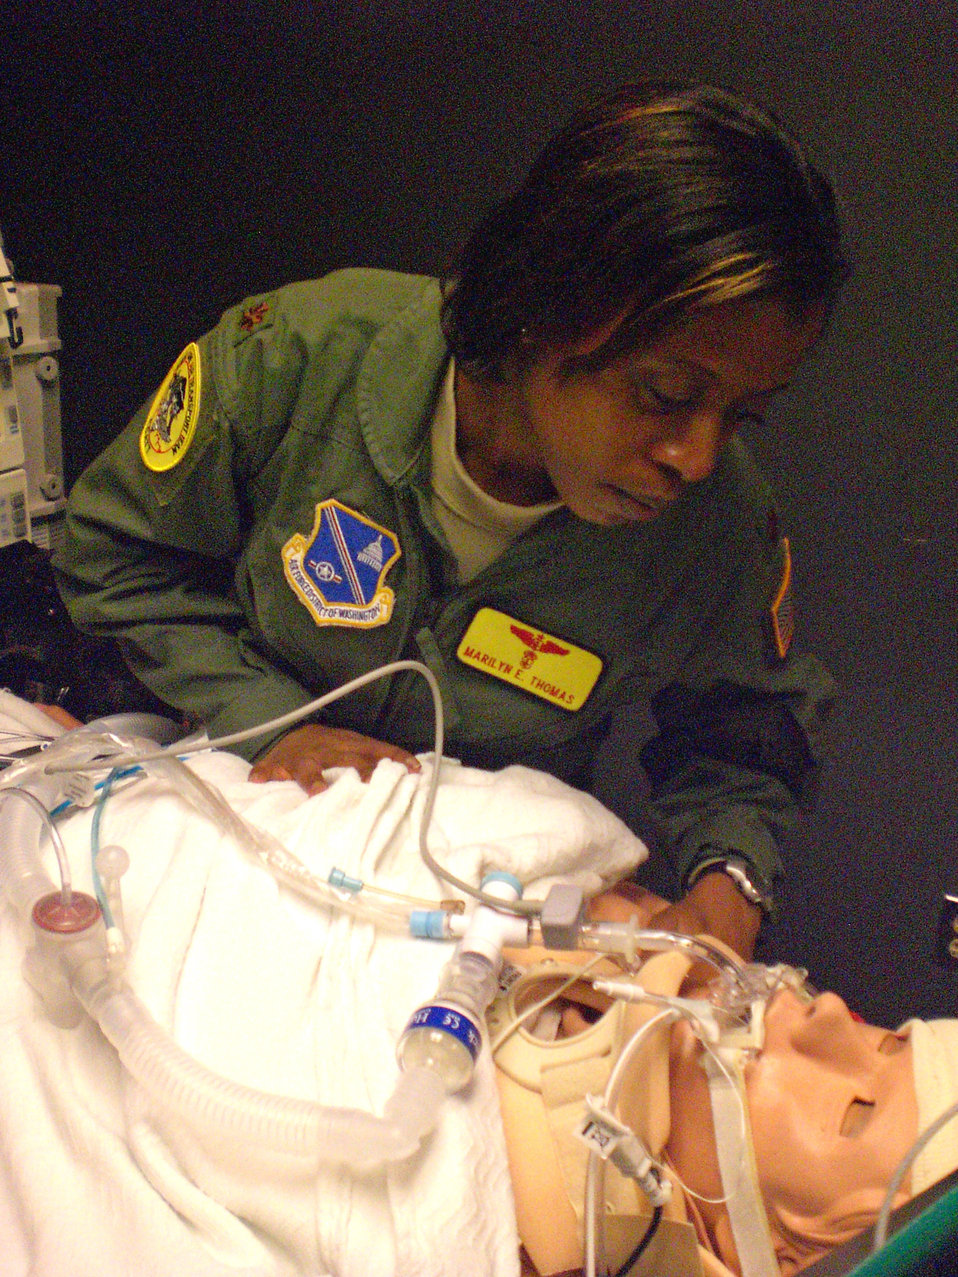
CSTARS trains Air Force trauma teams

Maj. Marilyn Thomas, a critical care nurse from Andrews Air Force Base, Md., looks at one of the human patient simulator manikins inside the Air Force's CSTARS Feb. 12, 2010, at University Hospital Cincinnati in Cincinnati, Ohio. Major Thomas, already a flight nurse for aeromedical evacuation missions, is training to become a critical care air transport team member. CSTARS Cincinnati trains CCATT members and evaluates their readiness to fly missions downrange.